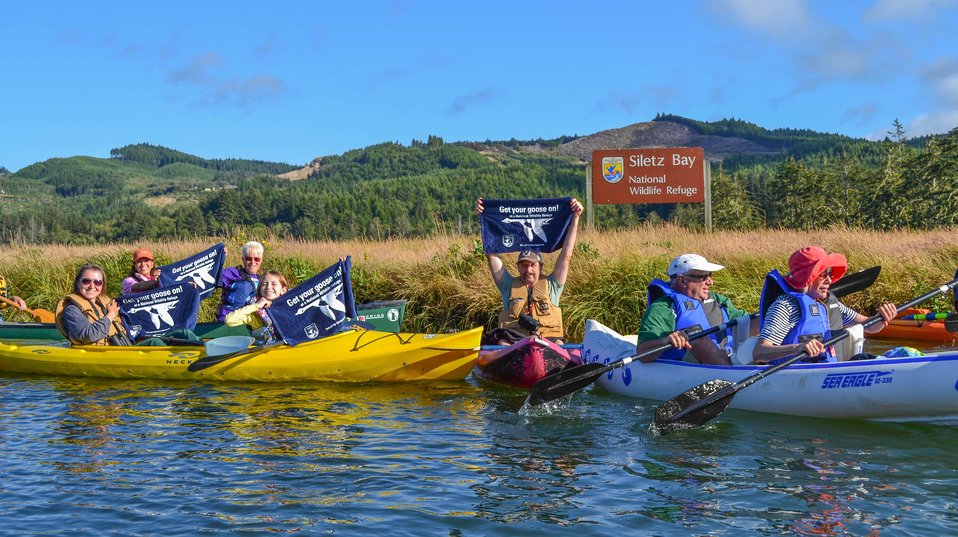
Get Your Goose On! - Siletz Bay Style

Paddling with friends in Siletz Bay National Wildlife Refuge!